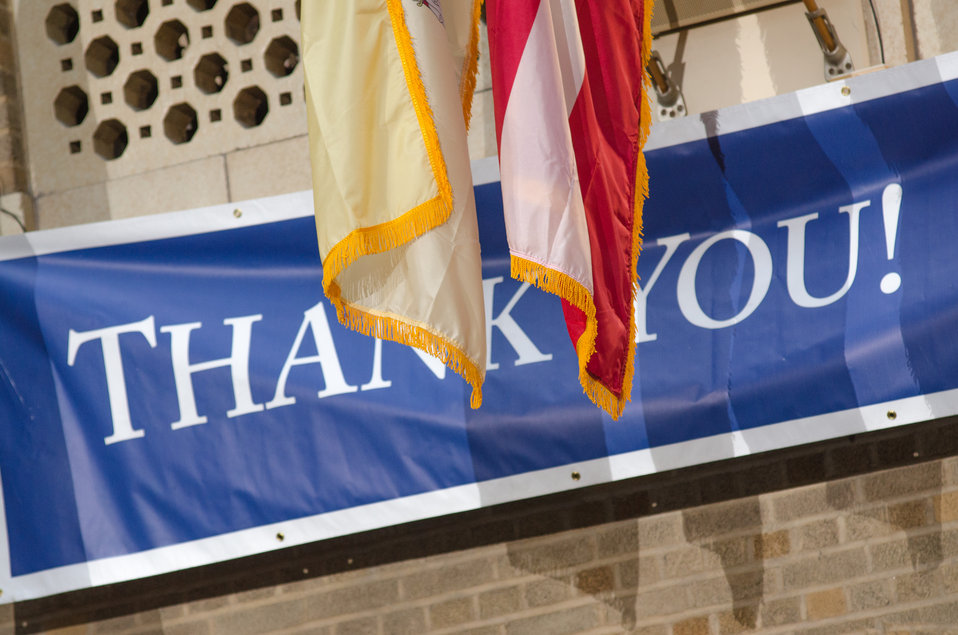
U.S. Department of Agriculture (USDA) 2012 Combined Federal Campaign (CFC) Awards Ceremony, Thursday, Mar. 21, 2013, at the USDA Whitten Building Patio, in Washington D.C.